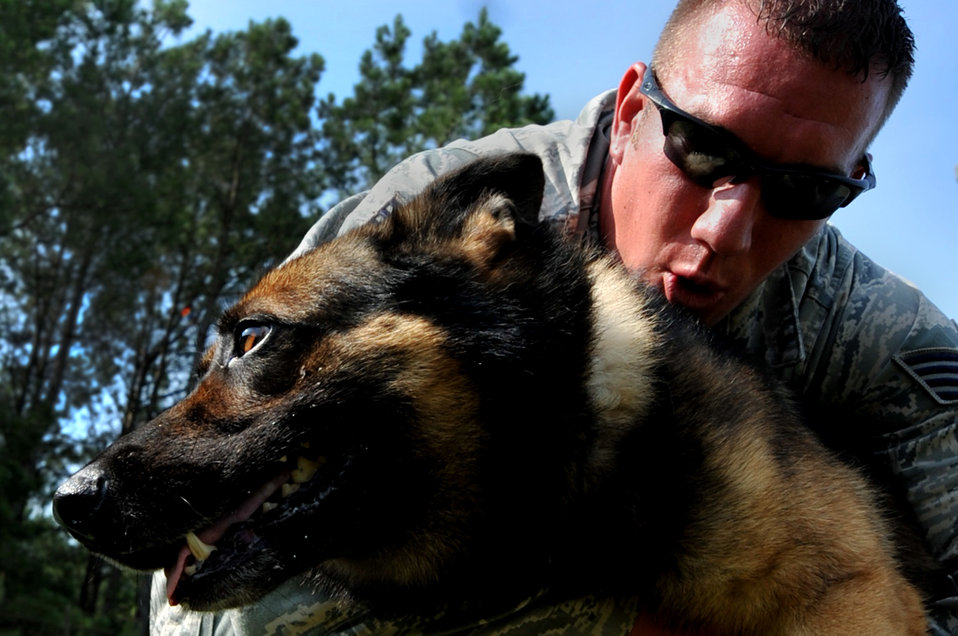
20th Security Forces Squadron Military Working Dog

Staff Sgt. Jason Albrecht, a 20th Security Forces Squadron senior military working dog handler, praises Markey after a job well done upon completion of an obedience training session July 13, 2011, at Shaw Air Force Base, S.C. The 20th SFS MWD trainers work hard to train and prepare dogs, like Markey, for real world situations, such as drug raids, patrols and other specialized mission functions for the Department of Defense and government agencies.